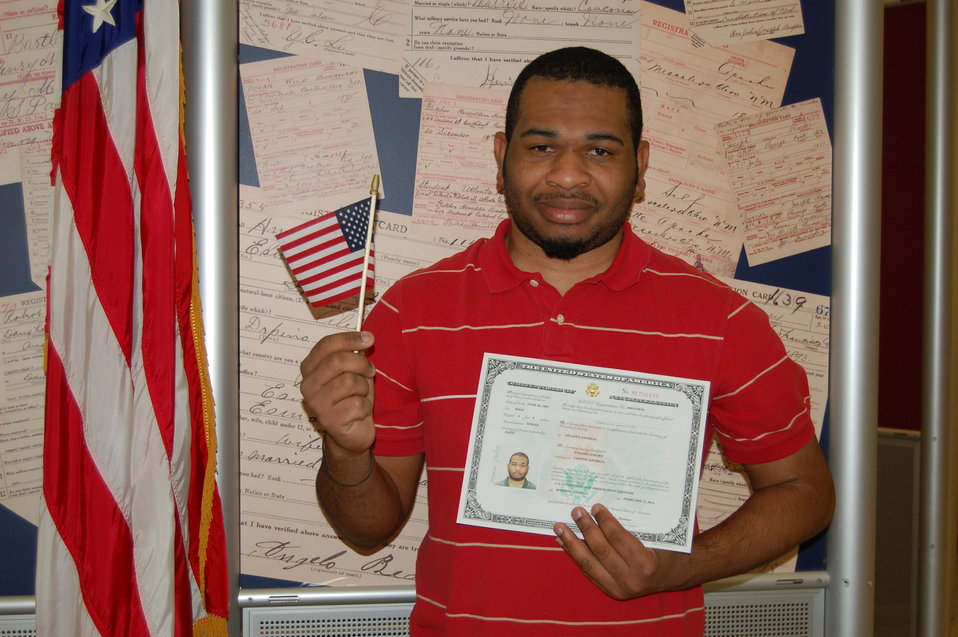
New Citizens